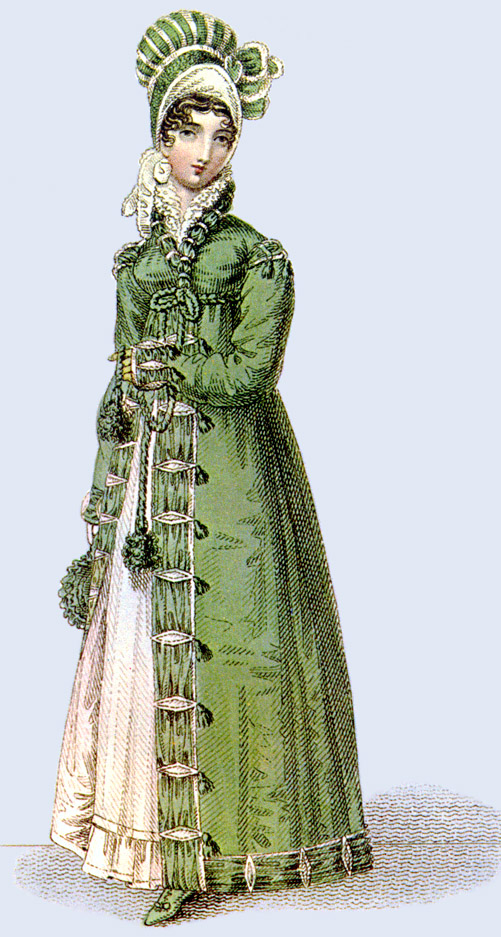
1817-walking-dress-La-Belle-Assemblee